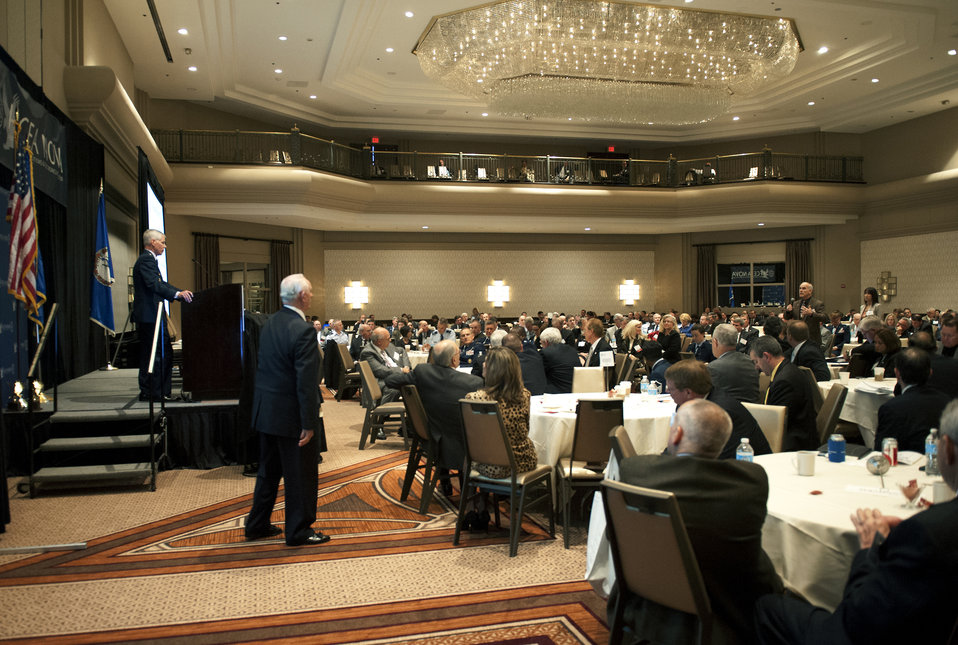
Gen. Shelton speaks to IT conference

Gen. William L. Shelton, left, commander of the Air Force Space Command, listens as an attendee asks a question during the 11th Annual Air Force IT Day at Tyson's Corner, Va., Oct. 11, 2012. The event is an anual one-day conference focused on issues and challenges facing the future Air Force.